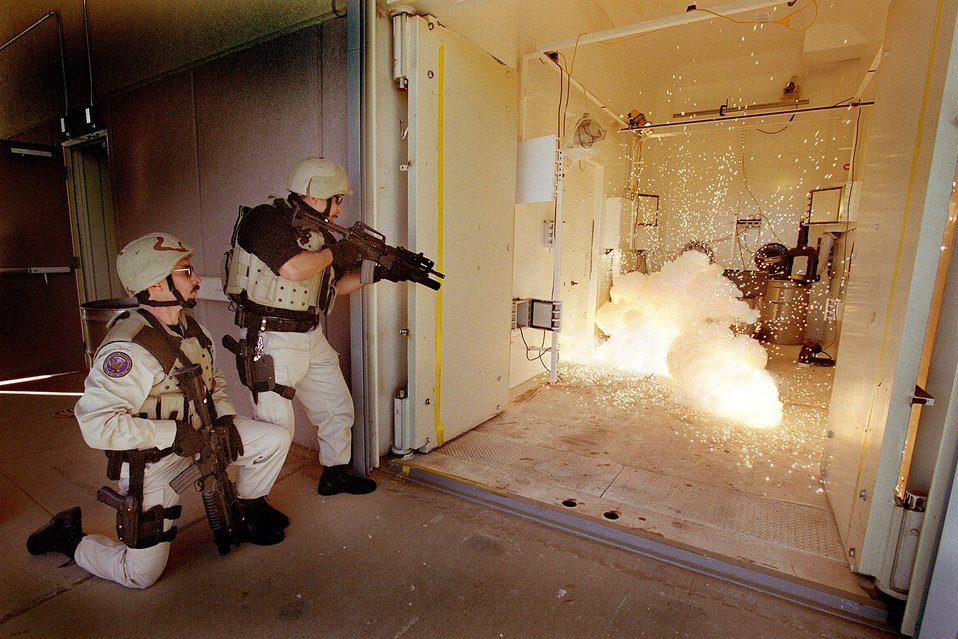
SANDIA SECURITY PERSONNEL OBSERVE EFFECTS OF EXPLOSIVE DEVICE DESIGNED TO STUN KIDNAPPERS OR TERRORISTS.

THIS SANDIA DEVELOPED NONLETHAL DEVICE ABOUT THE SIZE OF A SMALL SODA CAN, CREATES A BLINDING, DEAFENING, YET HARMLESS EXPLOSION WHEN LOBBED INTO A ROOM. THE DEVICE IS OF INTEREST TO POLICE DEPARTMENTS AND LAW ENFORCEMENT OFFICIALS FROM A VARIETY OF FEDERAL AGENCIES.